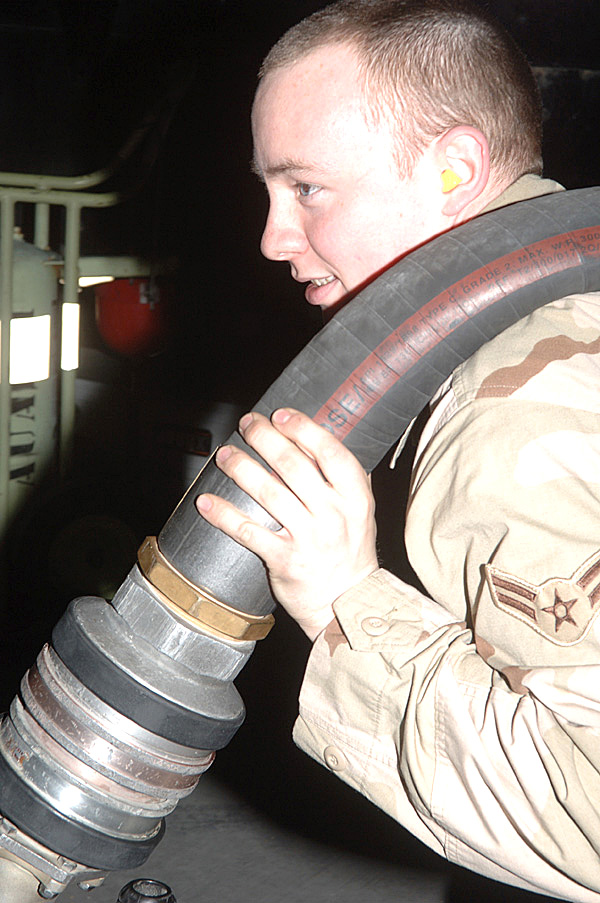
Fueled and ready

Airman 1st Class Jay Pickle pulls a fuel hose to fill an A-10 Thunderbolt II aircraft. Airman Pickle is a mobile distribution operator with the 455th Expeditionary Logistics Readiness Squadron petroleum oil and lubricant element. The fuels Airmen deliver fuel to more than 35 aircraft per day and more than 415,000 gallons per week.